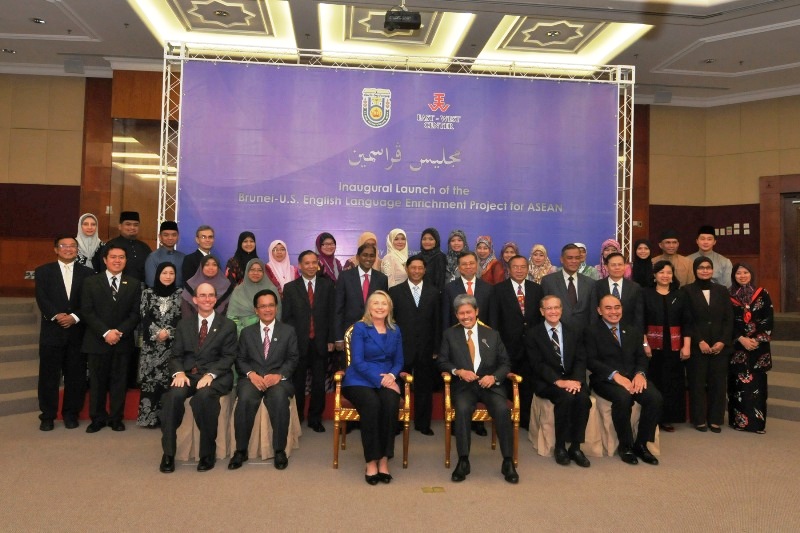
Secretary Clinton and Brunei's Foreign Minister Prince Mohamed Bolkiah Participate in the Launch of the Brunei-U.S. English Language Enrichment Project

U.S. Secretary of State Hillary Rodham Clinton and Brunei's Foreign Minister Prince Mohamed Bolkiah participate in the inaugural launch of the Brunei-U.S. English Language Enrichment Project for ASEAN in Bandar Seri Begawan, Brunei. September 7, 2012.